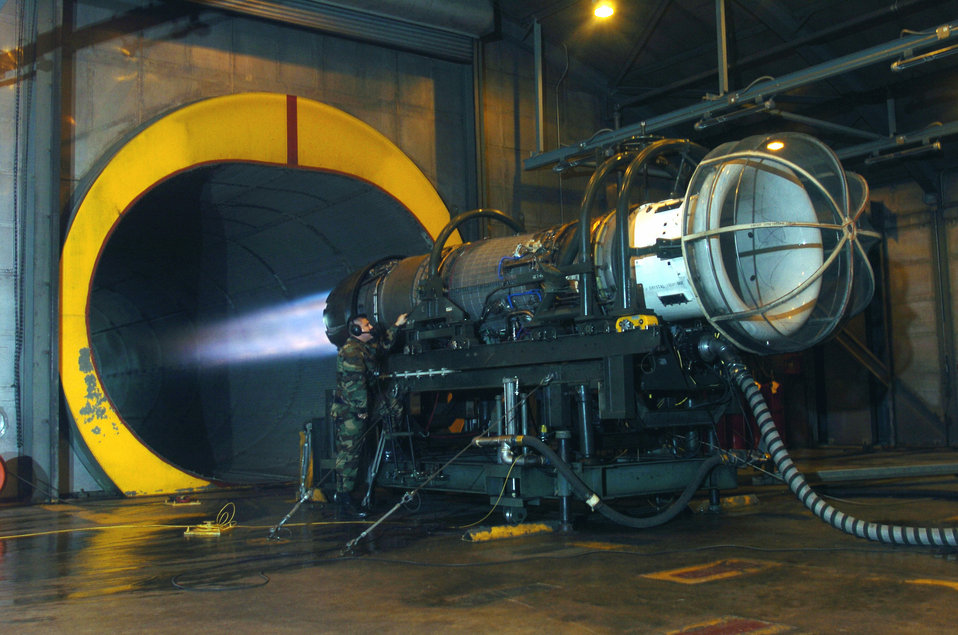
Keep engines running

OSAN AIR BASE, South Korea -- Staff Sgt. Daniel Guerra looks for fuel leaks and cracks while an F-16 Fighting Falcon engine